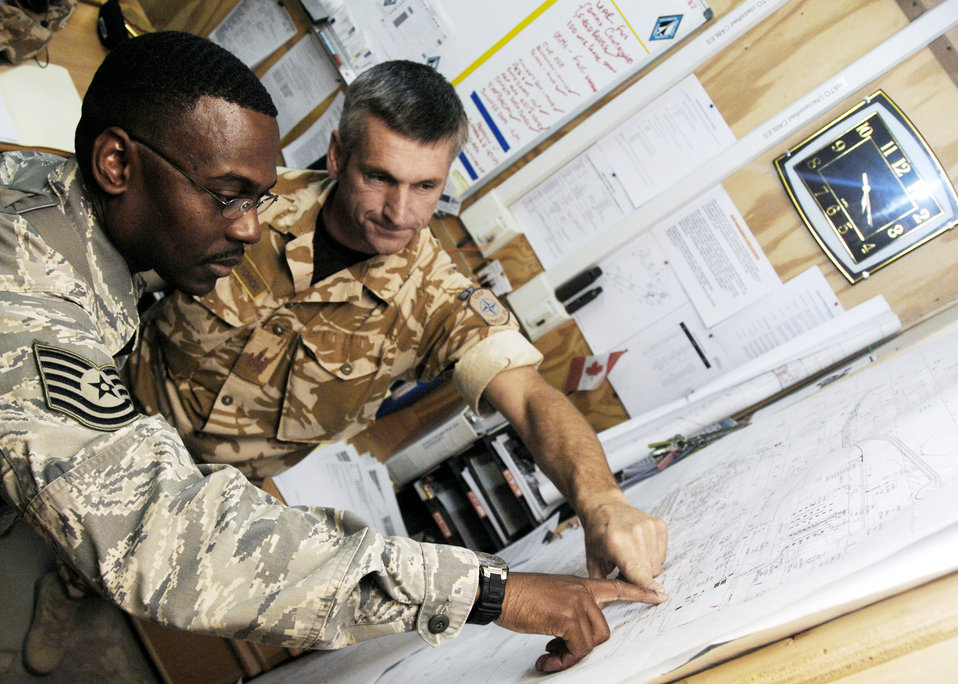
Kandahar Airmen focus on safety

Tech. Sgt. Anthony Moore and British Warrant Officer Neil Baum monitor control construction and facility utilization inside explosives clear zones here Dec. 3, 2009, at Kandahar Airfield, Afghanistan. Sergeant Moore is a weapons safety manager for the 451st Safety Office from Langley Air Force Base, Va.